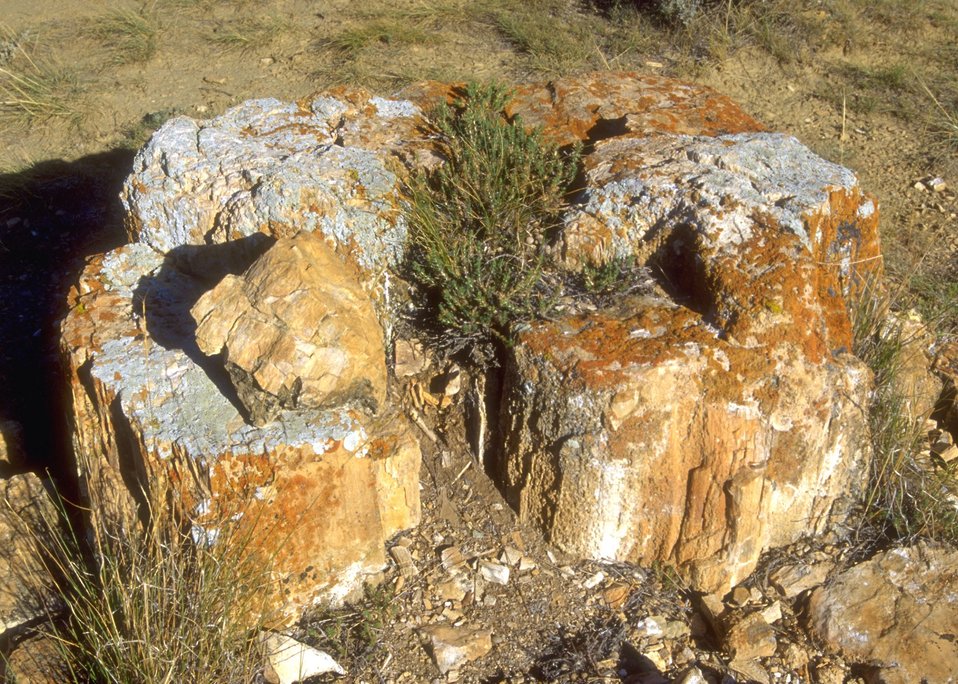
Dry Creek Petrified Tree Area, Buffalo Field Office.